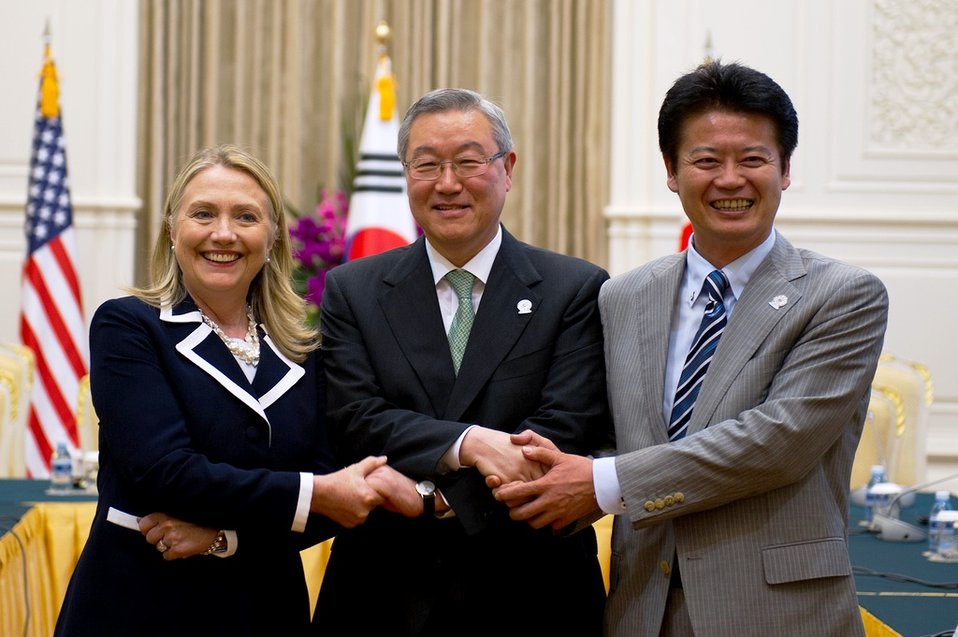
Secretary Clinton Meets With Korean Foreign Minister Kim and Japanese Foreign Minister Gemba

U.S. Secretary of State Hillary Rodham Clinton meets with Korean Foreign Minister Kim Sung-hwan and Japanese Foreign Minister Koichiro Gemba, in Phnom Penh, Cambodia, on July 12, 2012.